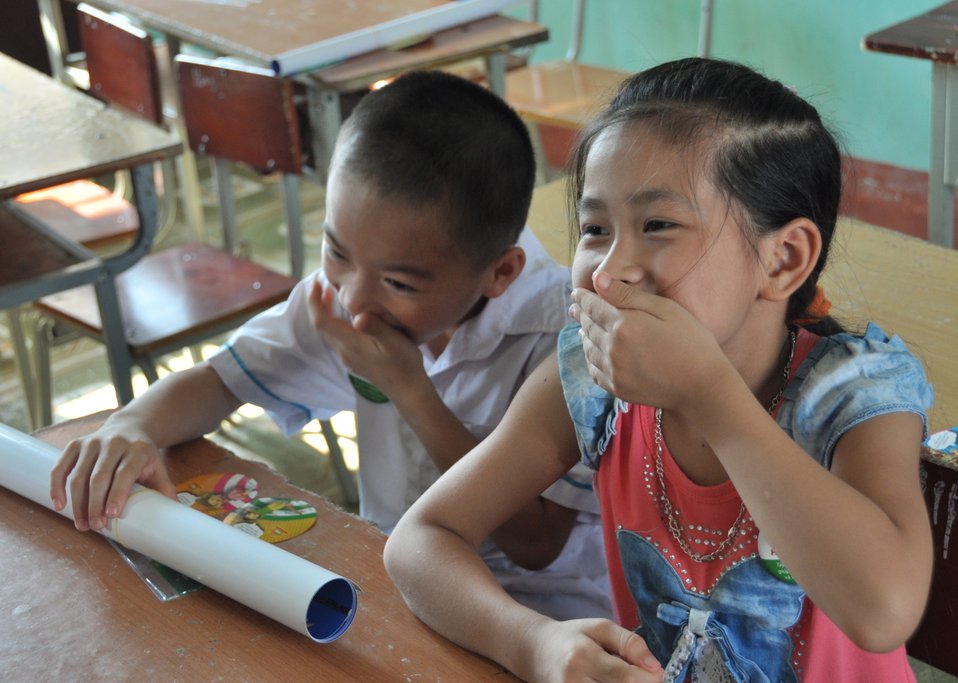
USAID supports deworming education and medication distribution in Bac Giang Province

May 20, 2013